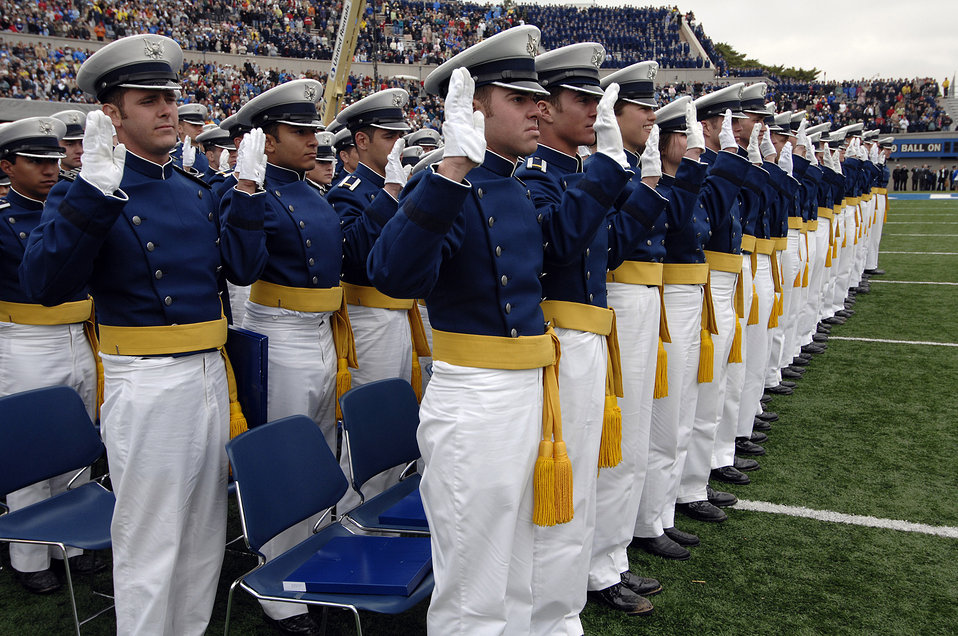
The 50th Academy class graduates

Cadets from the U.S. Air Force Academy Class of 2008 are administered the Oath of Office as second lieutenants May 28 during the graduation ceremony at Falcon Stadium.